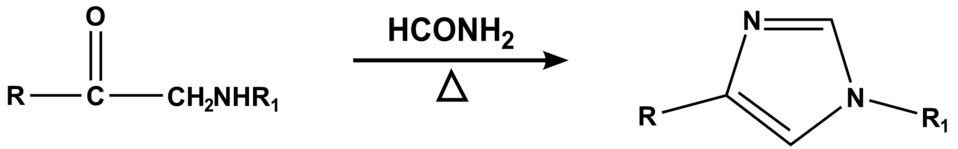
Chemical reaction describing a (1,2) and (3,4) bond formation in imidazole.